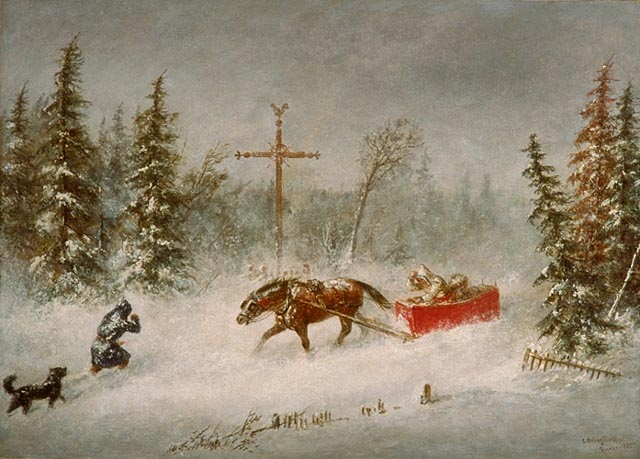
The Blizzard, oil on canvas painting by Cornelius Krieghoff, 1857, National Gallery of Canada